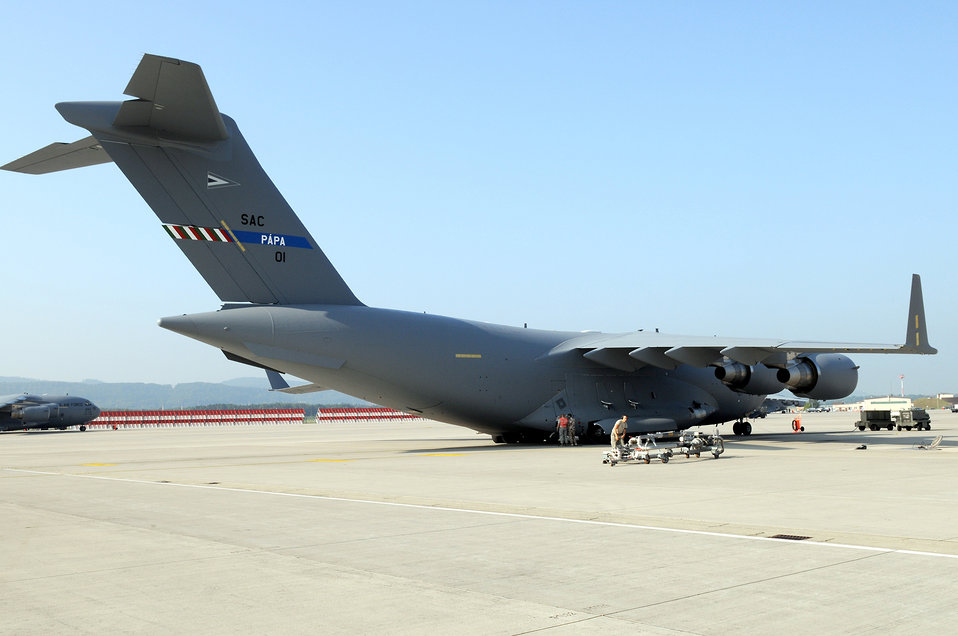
New unit, new way of doing international business

A C-17 Globemaster III assigned to the Heavy Airlift Wing at Papa Air Base, Hungary, stands ready for take-off Aug. 18 at Ramstein Air Base, Germany. The HAW, comprising 12 nations, operates independently of NATO's military command and was created to help nations meet global reach commitments.